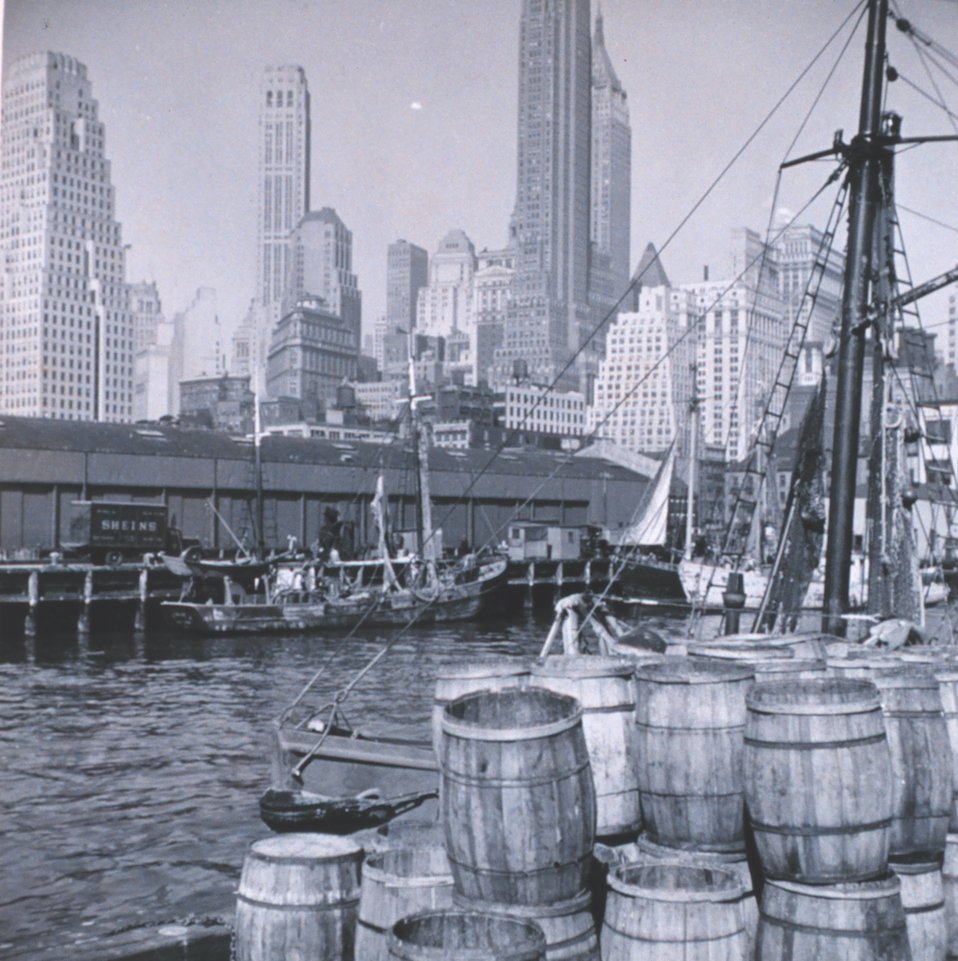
Fish market scene on the New York waterfront